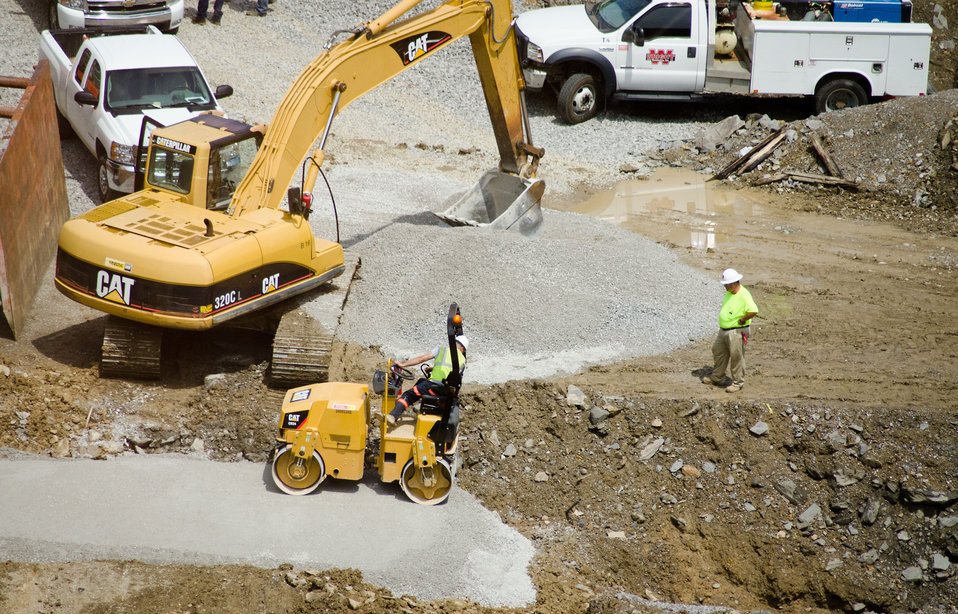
Above ground construction phase of Pikeville Medical Center (PMC) expansion project, on Tuesday, July 12, 2011, in Pikeville, KY. After months of infrastructure construction and rain delays, one of Kentucky’s largest American Recovery and Reinvestment Act (ARRA) projects is under way. The $44.6 million Community Facilities Loan will finance construction of a new medical office building and parking garage.